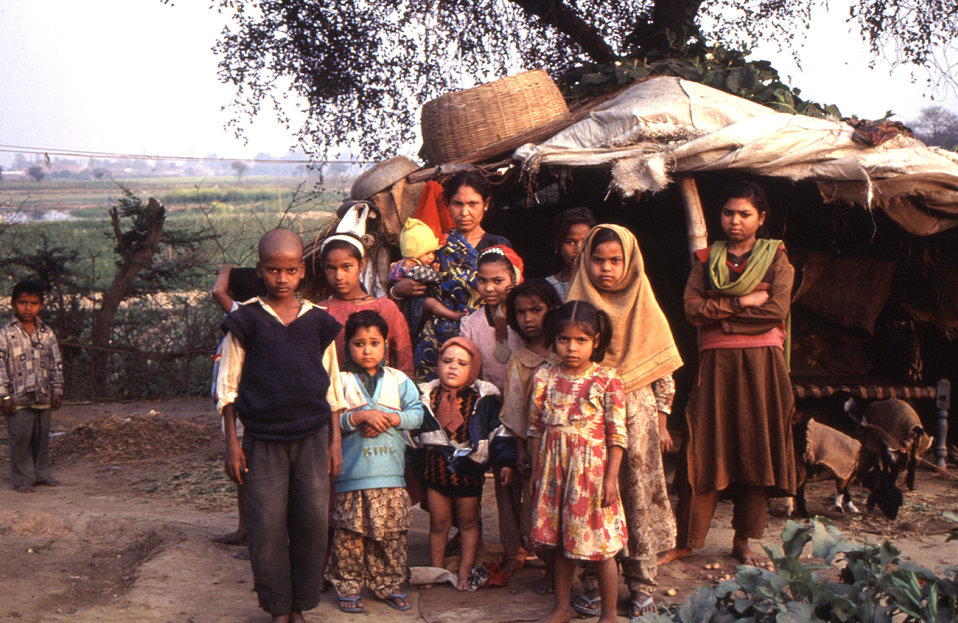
This photograph, taken in 2000, depicted a gathering of family members in a rural area in Uttar Pradesh, India. The image was captured during a visit made to this village by health care practitioners, which included Stop Transmission of Polio (STOP) members such as Chris Zahniser, B.S.N., R.N., M.P.H., who was also the provider of this picture, as well as a number of others from this field assignment. The visit allowed the health care workers to check on the child village members in order to determine their polio vaccination status.